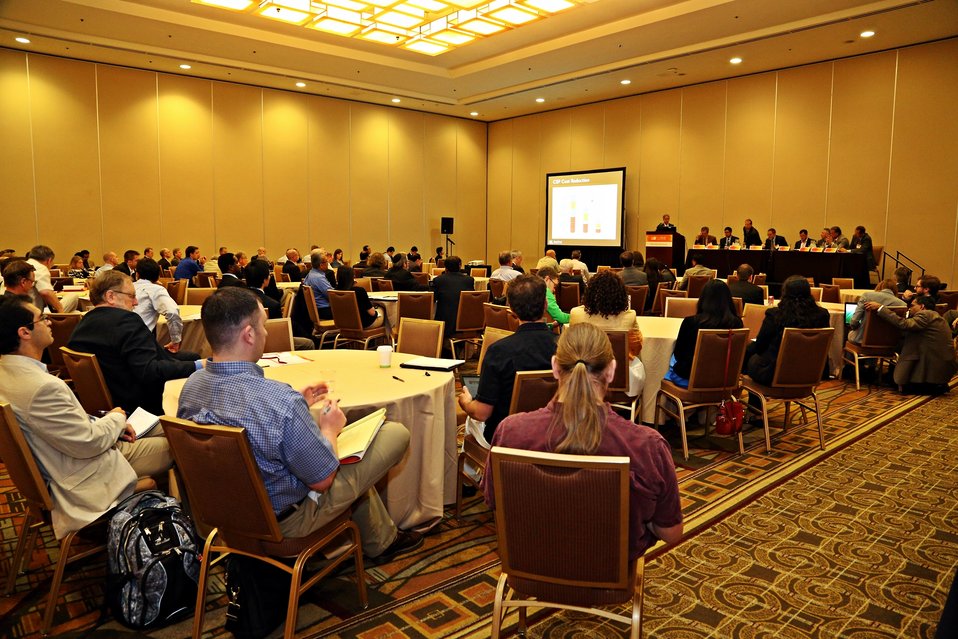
Breakout Sessions 9